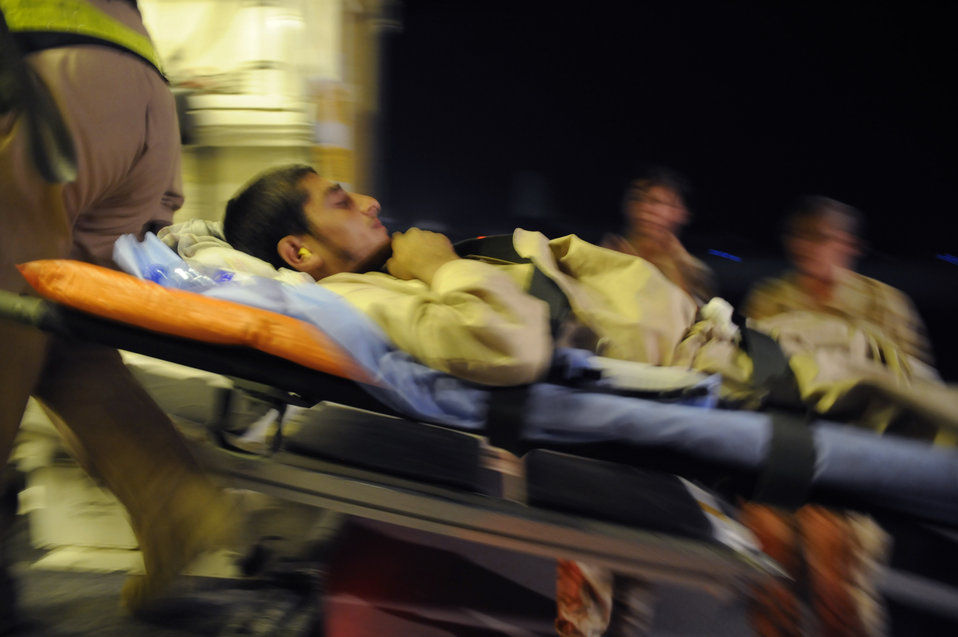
Airmen coordinate smooth transition of wounded to higher medical care

Military personnel assigned to the aeromedical evacuation liaison team carry an Afghan boy who is returning home after weeks of care and rehabilitation by U.S. and Afghan medical personnel June 23 at Camp Bastion, Afghanistan. The boy lost his leg when a landmine exploded as he was walking along a road.